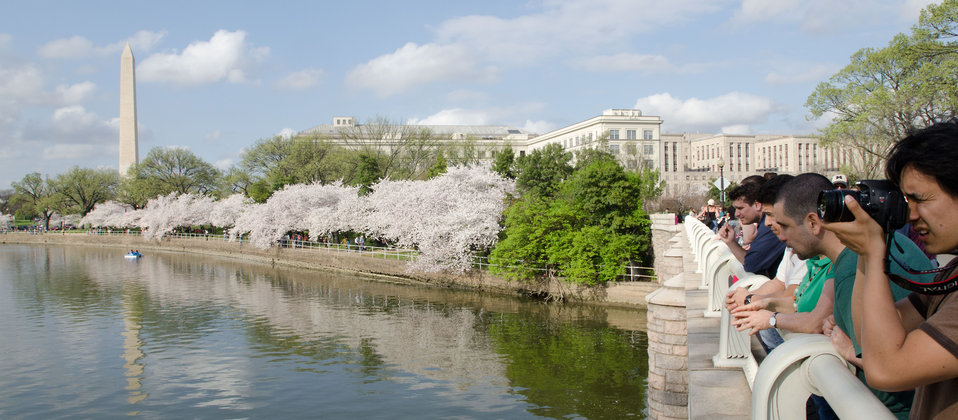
Cherry blossoms at the Tidal Basin in Washington, D.C., on Tuesday, March 20, 2012.